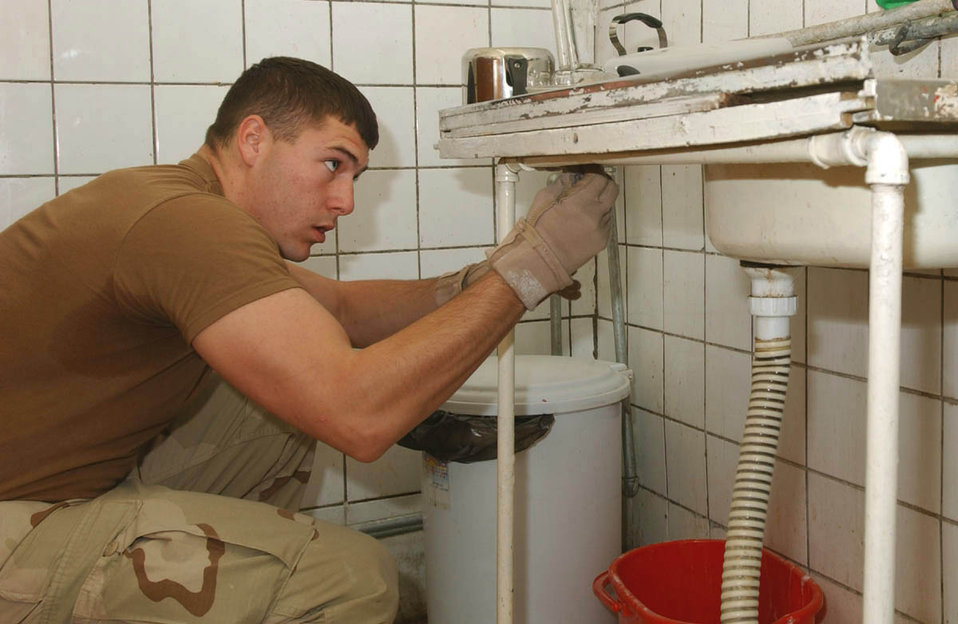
Surprise inspection nets weapons, alcohol, merchandise

KIRKUK AIR BASE, Iraq -- Airman Joshua Dennison inspects a sink for contraband during a surprise inspection of areas inhabited by third-country workers and American contractors. He is assigned to the 506th Air Expeditionary Group force protection office.